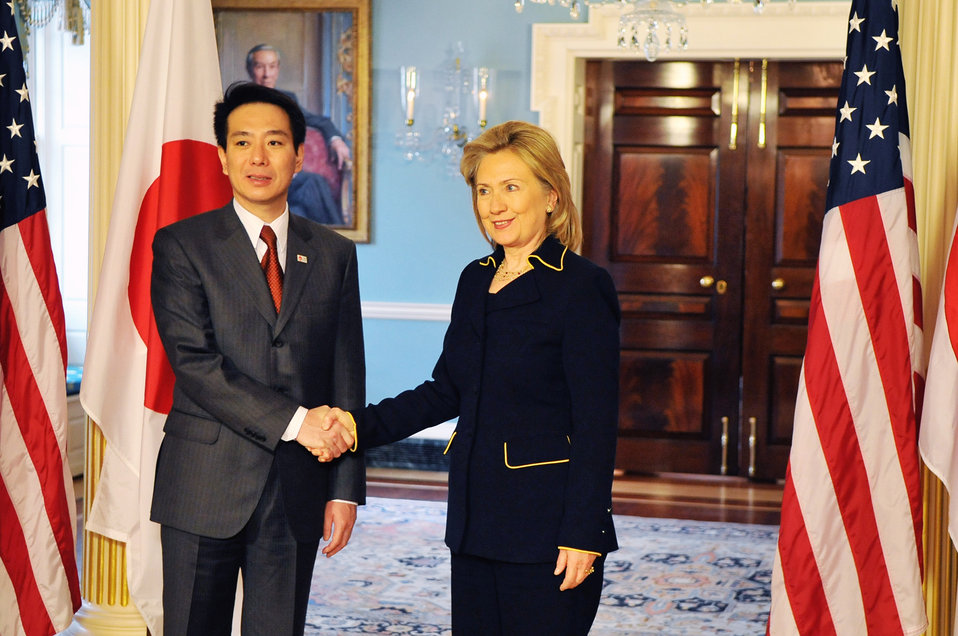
Secretary Clinton Shakes Hands With Japanese Foreign Affairs Minister Seiji Maehara

U.S. Secretary of State Hillary Rodham Clinton shakes hands with Japanese Foreign Affairs Minister Seiji Maehara after their bilateral meeting at the U.S. Department of State in Washington, D.C., on December 6, 2010.